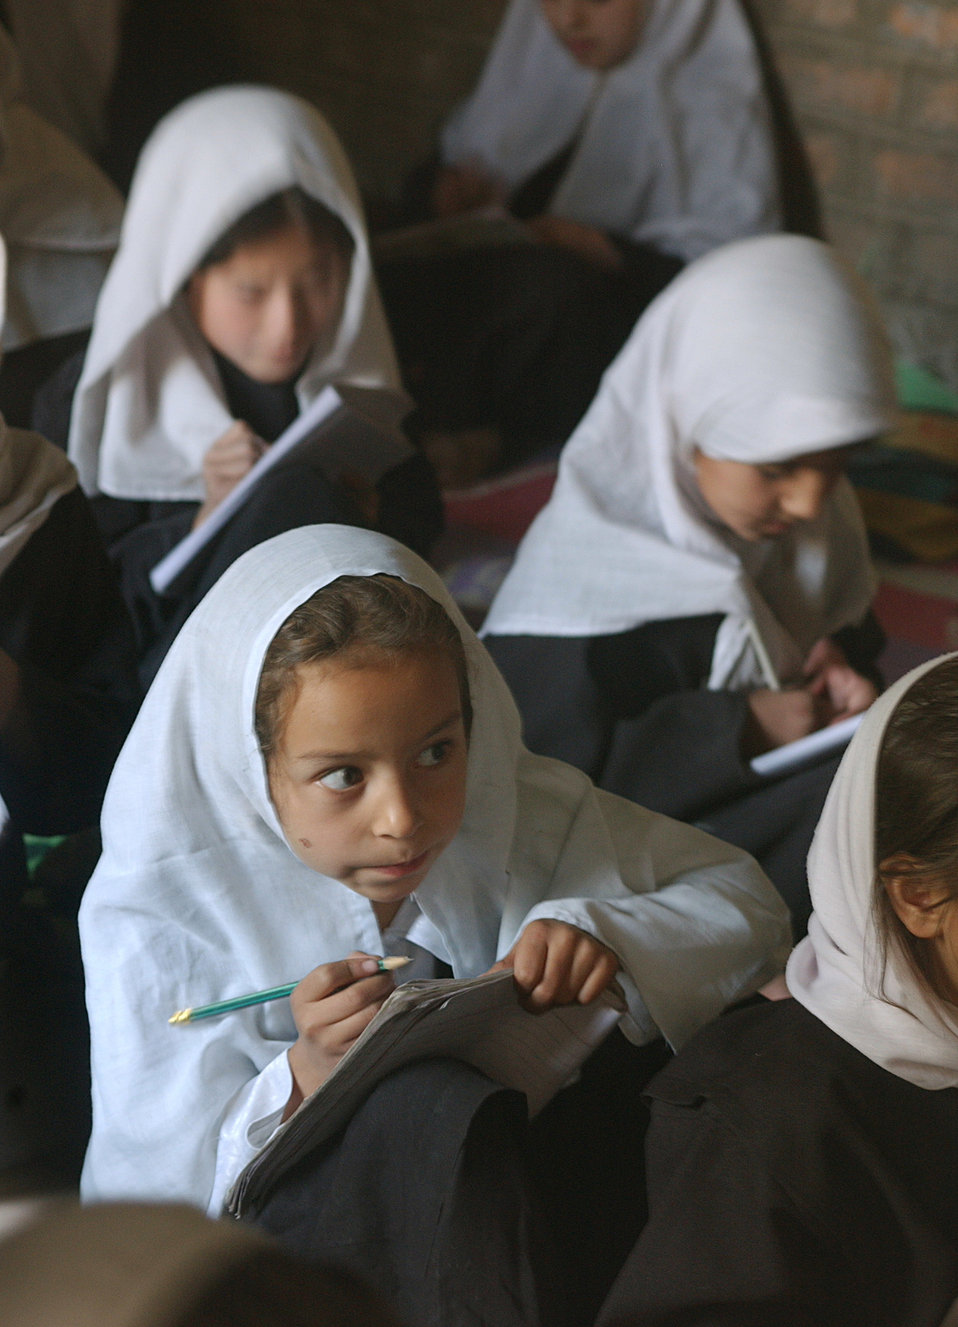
Education

Roughly eight million students are now enrolled in primary and secondary schools, 37% of which are female, and USAID has distributed more than 100 million textbooks for grades one through twelve. USAID’s education strategy meets the urgent and expanding need for schools, trained teachers, textbooks, and innovative approaches to expand access to education.